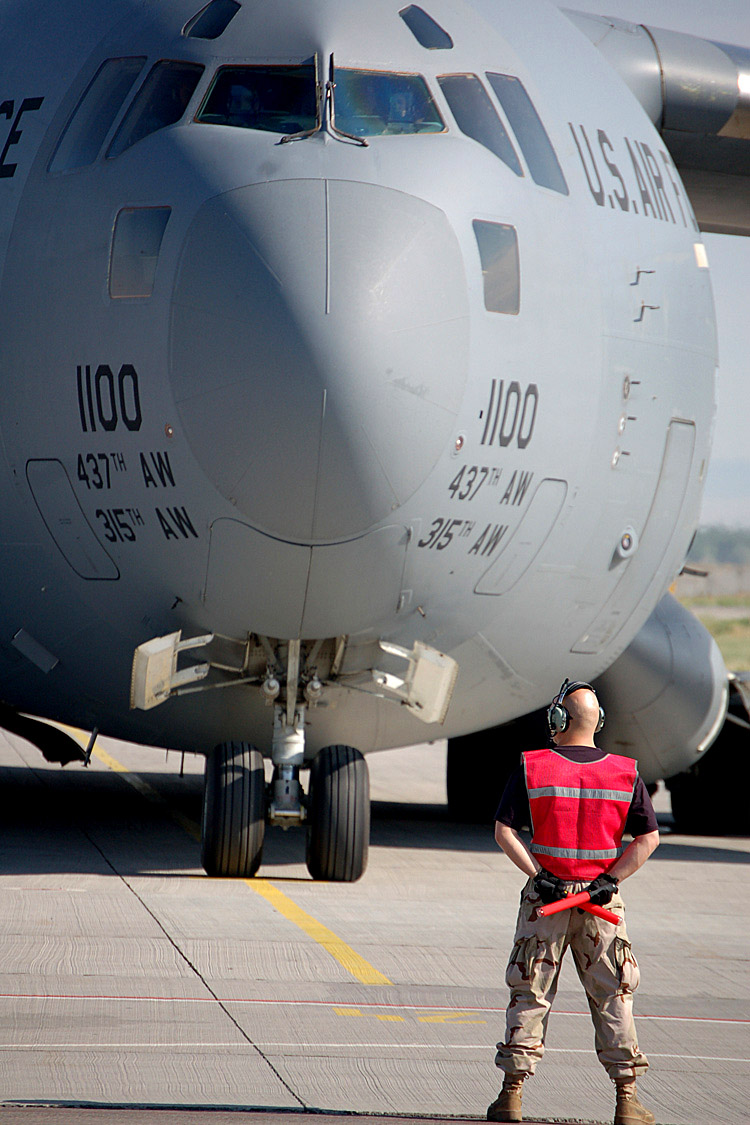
C-17 Globemaster III celebrates 16 years of flight

A C-17 Globemaster III sits on the ramp at Manas Air Base, Kyrgyzstan. C-17s play a vital role in moving cargo and passengers in support of operations in Afghanistan, Iraq and the Horn of Africa.